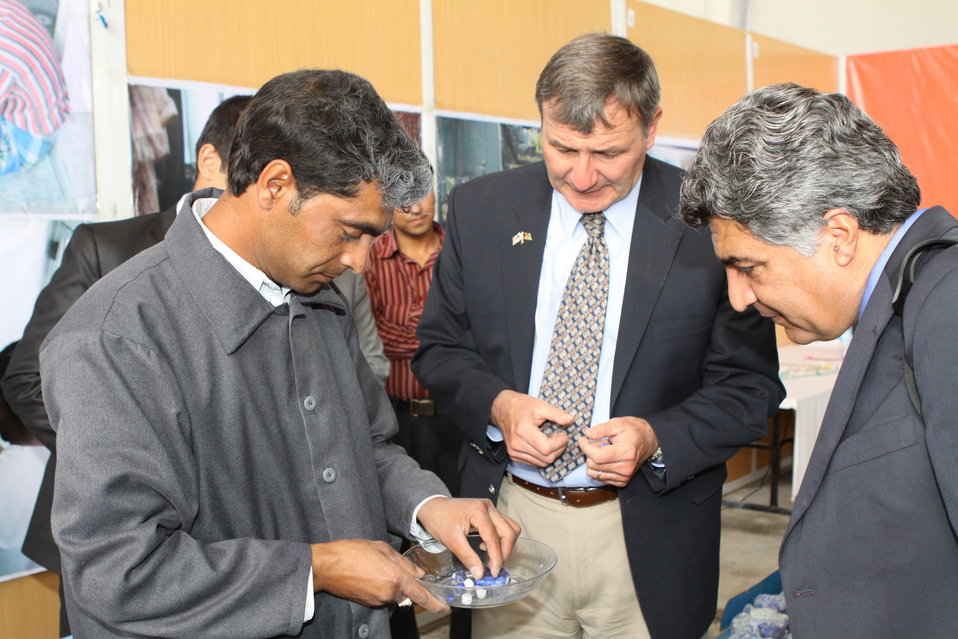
100525 Hirat Marble Conference 526